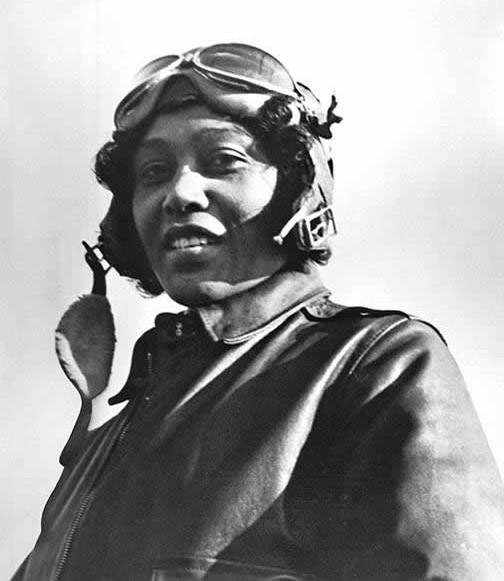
Janet Bragg: Trailblazer during African-American efforts to become part of early aviation.